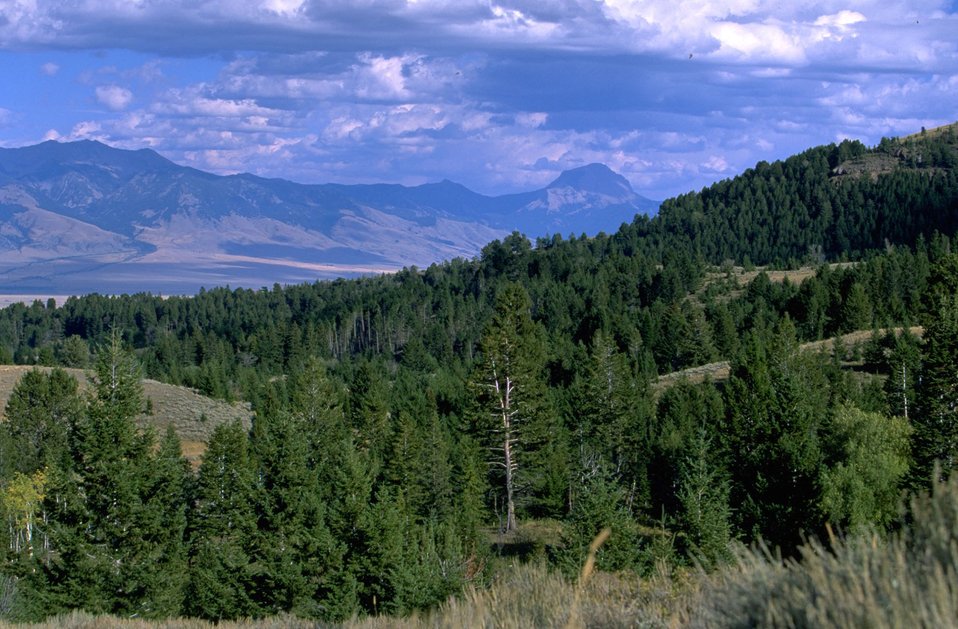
Mountain Range including The Sphinx